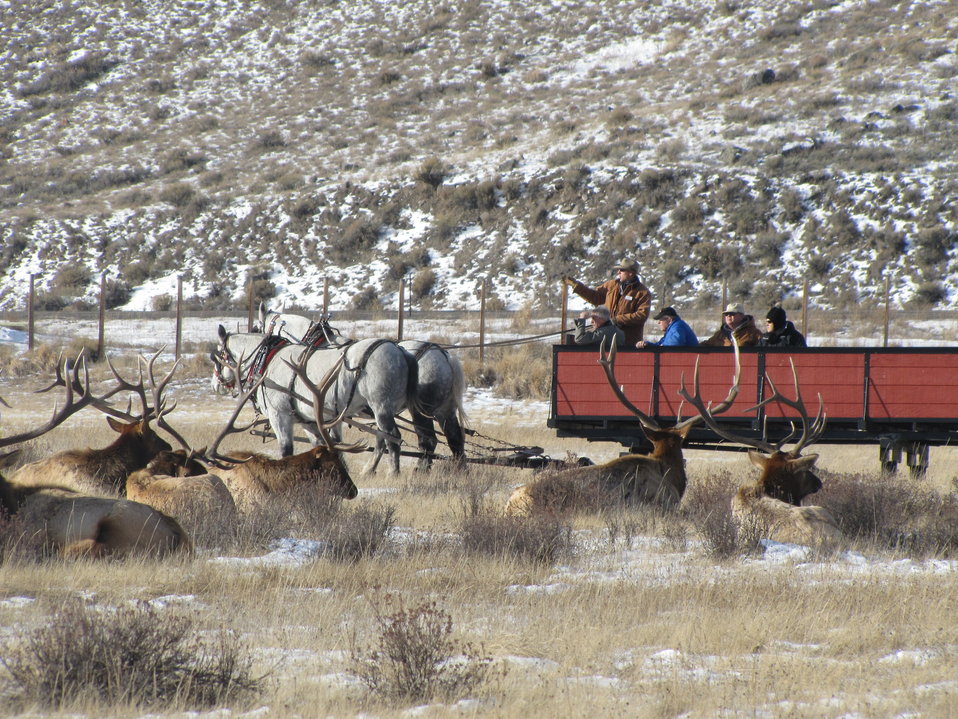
Interpreting from a Sleigh

Sleigh drivers provide an interpretive program during the rides, pointing out interesting features and educating the public about wildlife management.